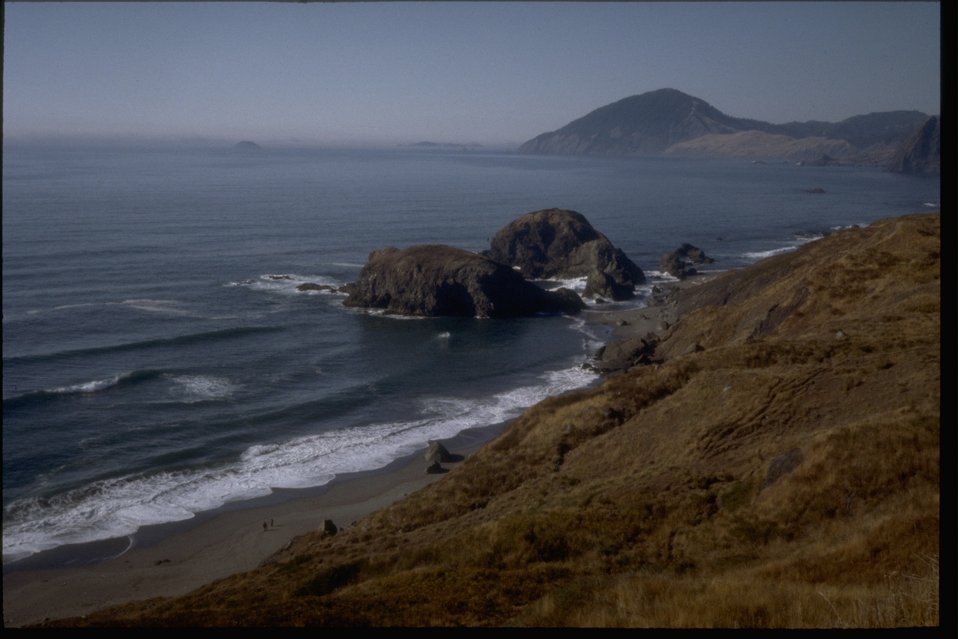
A long view of the North Sisters Islands on the coast line. OR 12-8